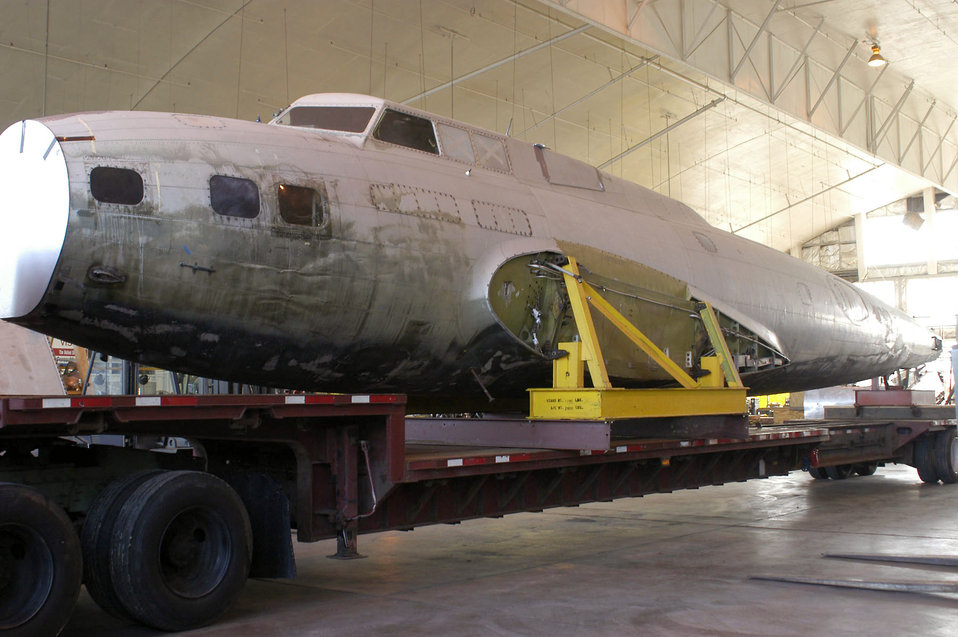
'The Swoose' finds new home at National Museum of the U.S. Air Force

The fuselage of the B-17D The Swoose sits on a trailer shortly after its arrival to the restoration facility at the National Museum of the U.S. Air Force near Dayton, Ohio.